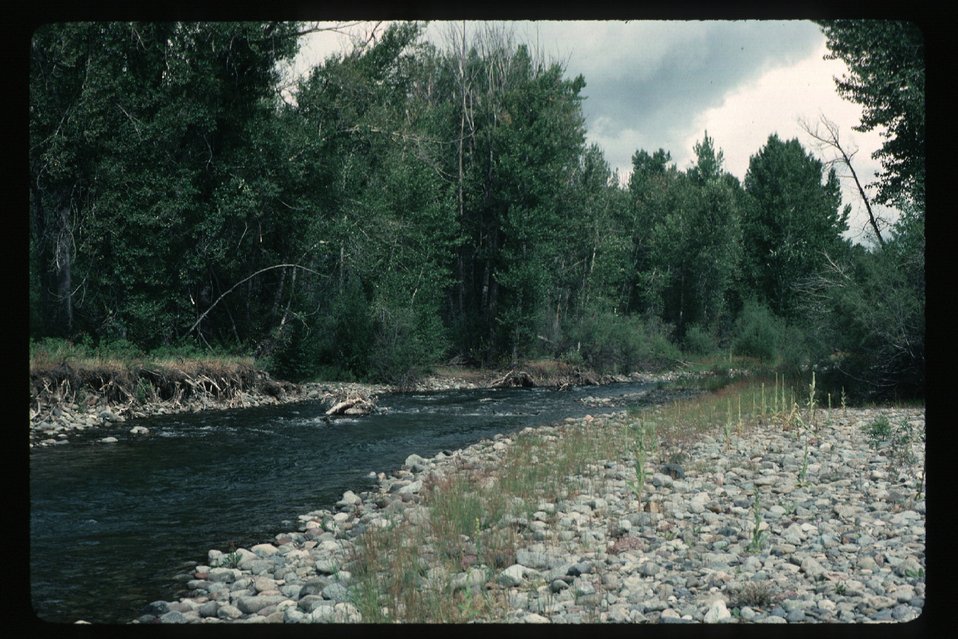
Recreation Scenic Biker Shoshone Field Office USRD Upper Snake River District